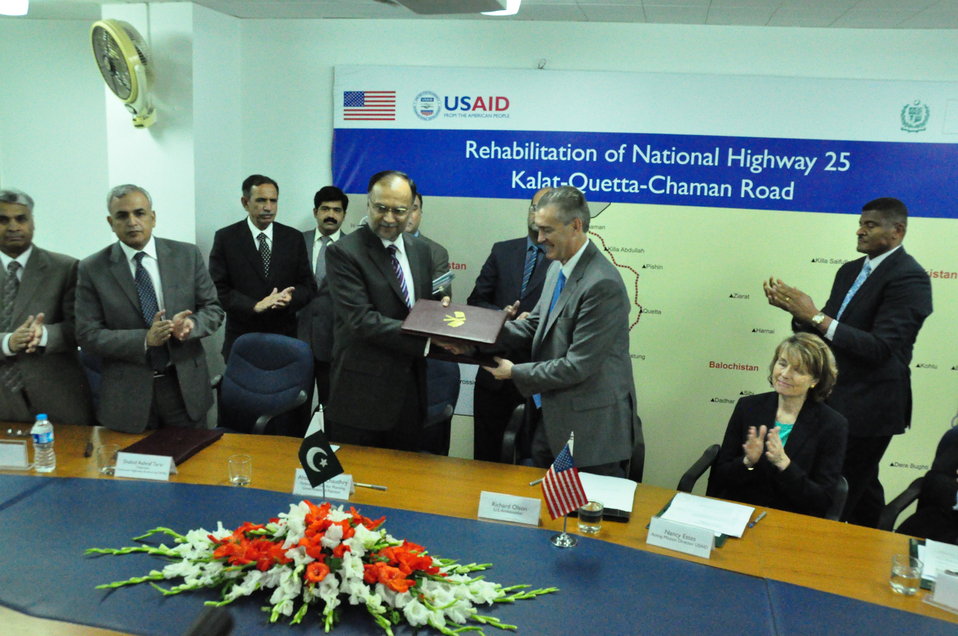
The United States and National Highway Authority Sign Agreement to Rehabilitate Kalat-Quetta-Chaman Highway